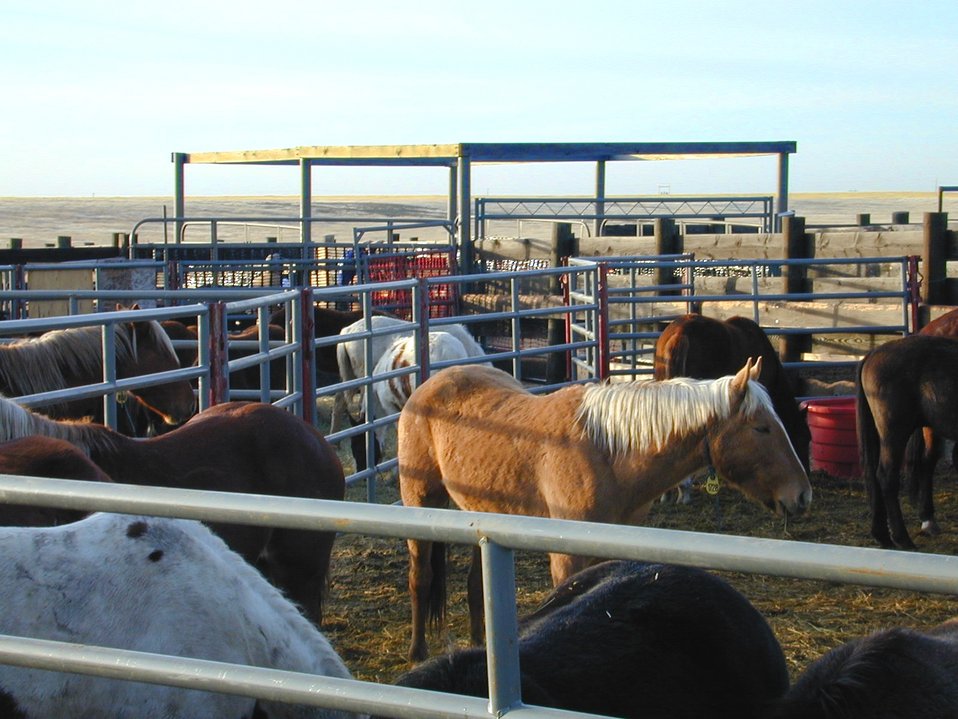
Wild Horse and Burro Adoption